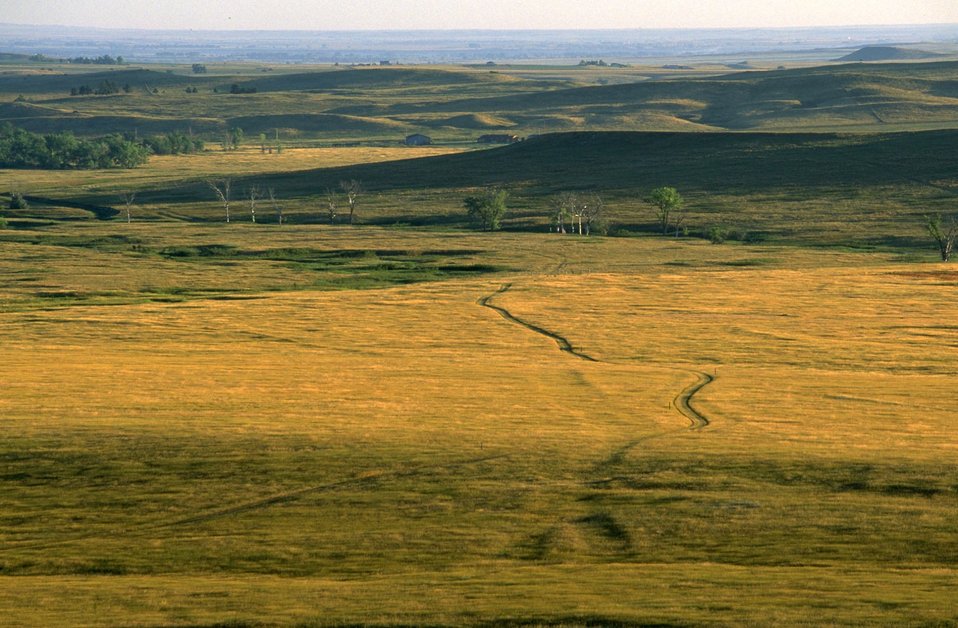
Grassland Vista